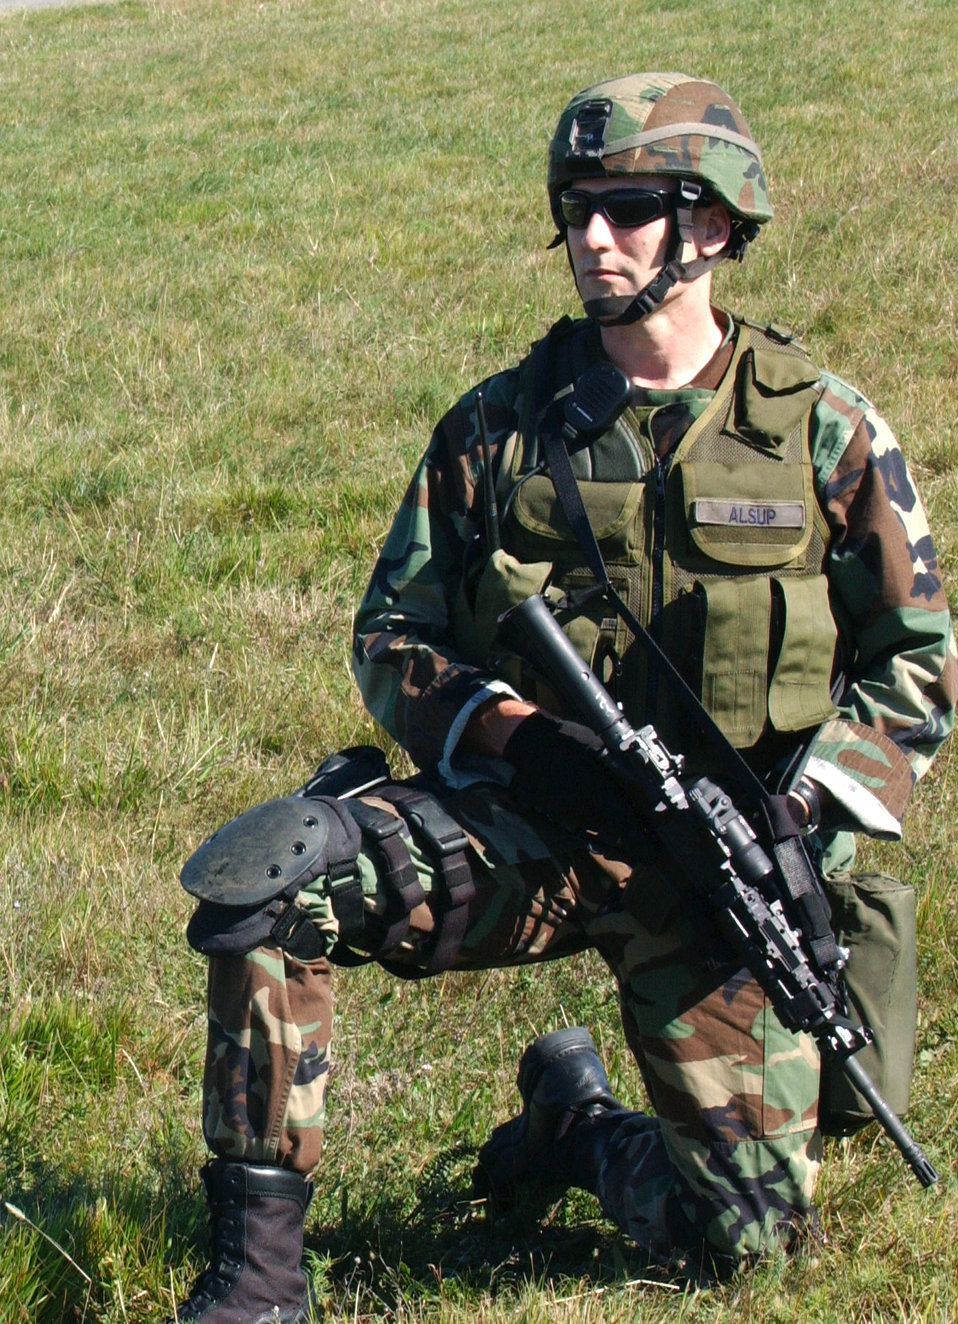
Joint training

AVIANO AIR BASE, Italy - Capt. Patrick Alsup participates in joint helicopter deployment training with the U.S. Air Force, Navy and the Italian carabineri here recently. Captain Alsup is assigned to the 31st Security Forces Squadron.